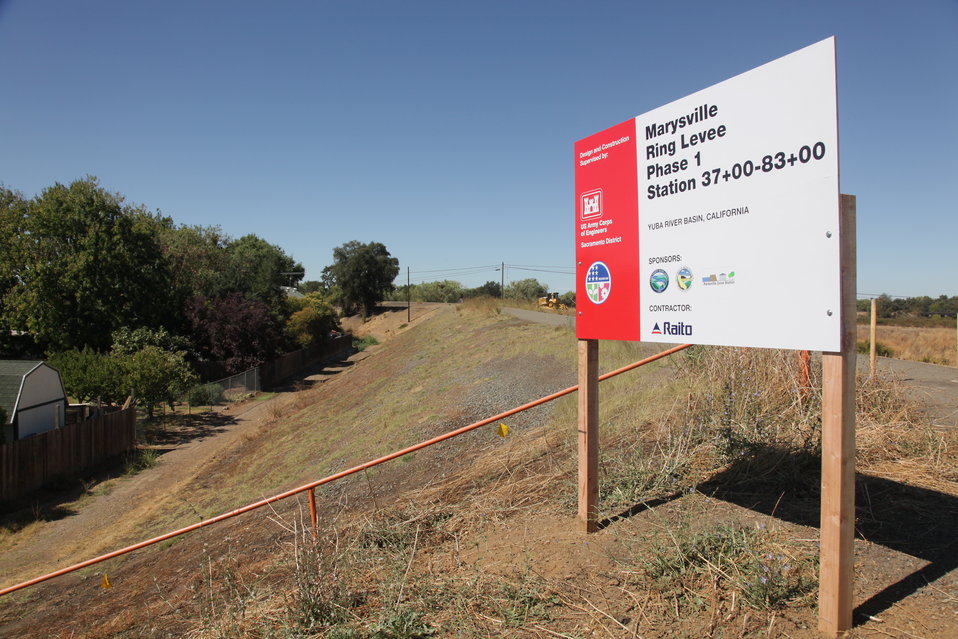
MARYSVILLE, Calif. (Sept. 20, 2010) -- A sign announces the $10.8 million Marysville Ring Levee project here. A ground-breaking ceremony for the project, lead by the U.S. Army Corps of Engineers Sacramento District, was held in Marysville, Calif., Sept. 20. The project, funded by the American Recovery and Reinvestment Act of 2009, reflects a remarkable level of collaboration by local, state and federal agencies.